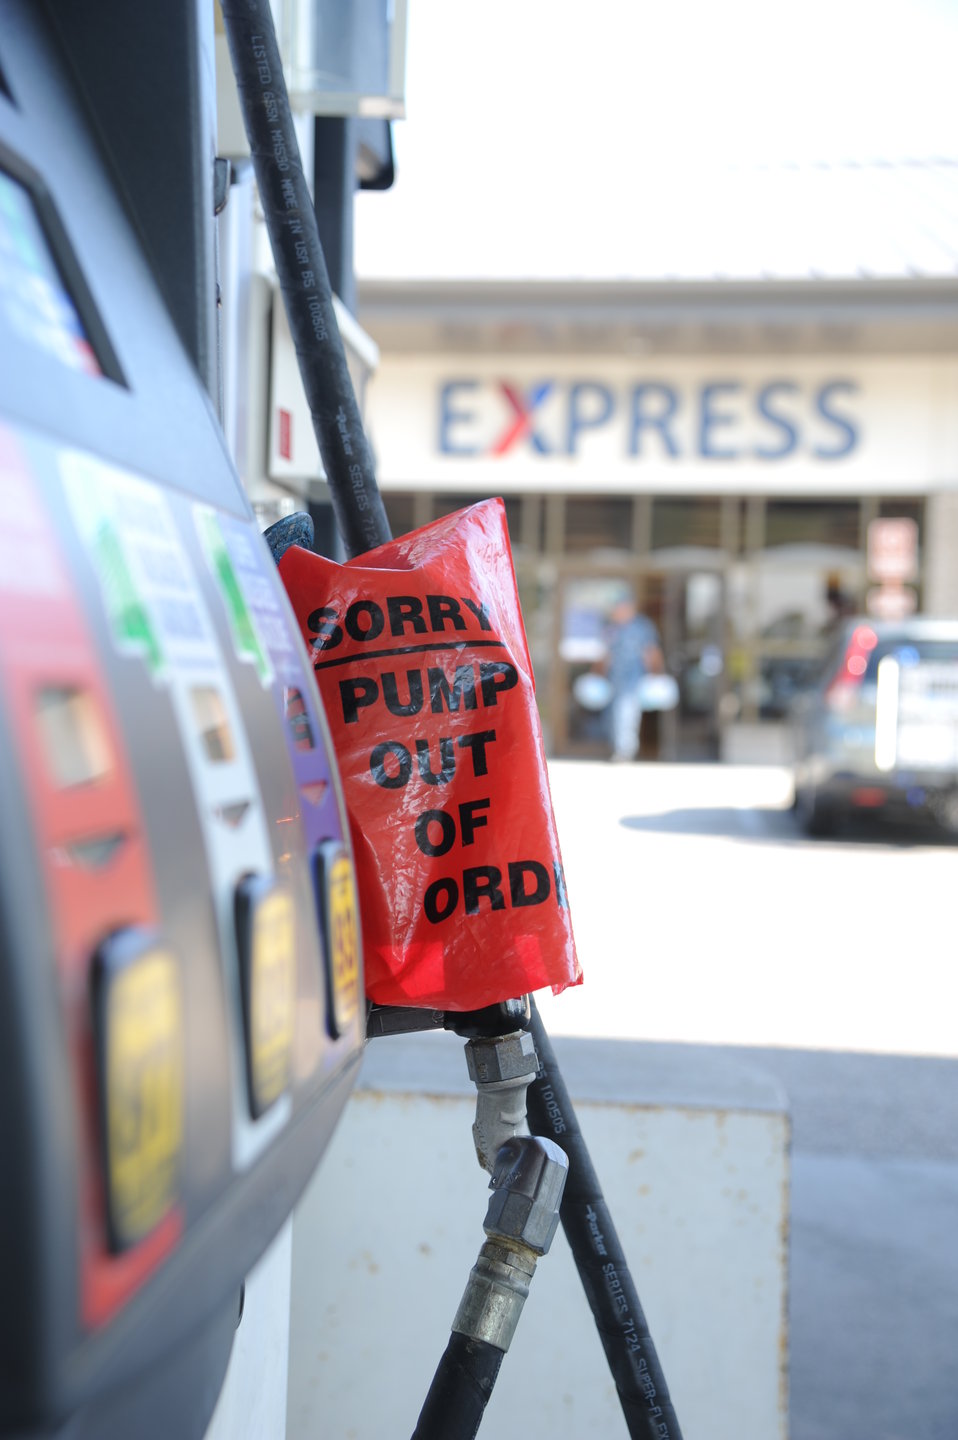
Keesler takes preventative measures to prepare for Isaac

8/28/2012 - Gasoline pumps temporarily ran out of gas at the Keesler Express Aug. 27, 2012, at Keesler Air Force Base, Miss., while awaiting an en route gas shipment. Keesler personnel are taking preventative measures to prepare and protect themselves and Keesler's assets as the base commander has declared HURCON 3, meaning destructive winds of 58 mph or greater are expected as Isaac approaches.